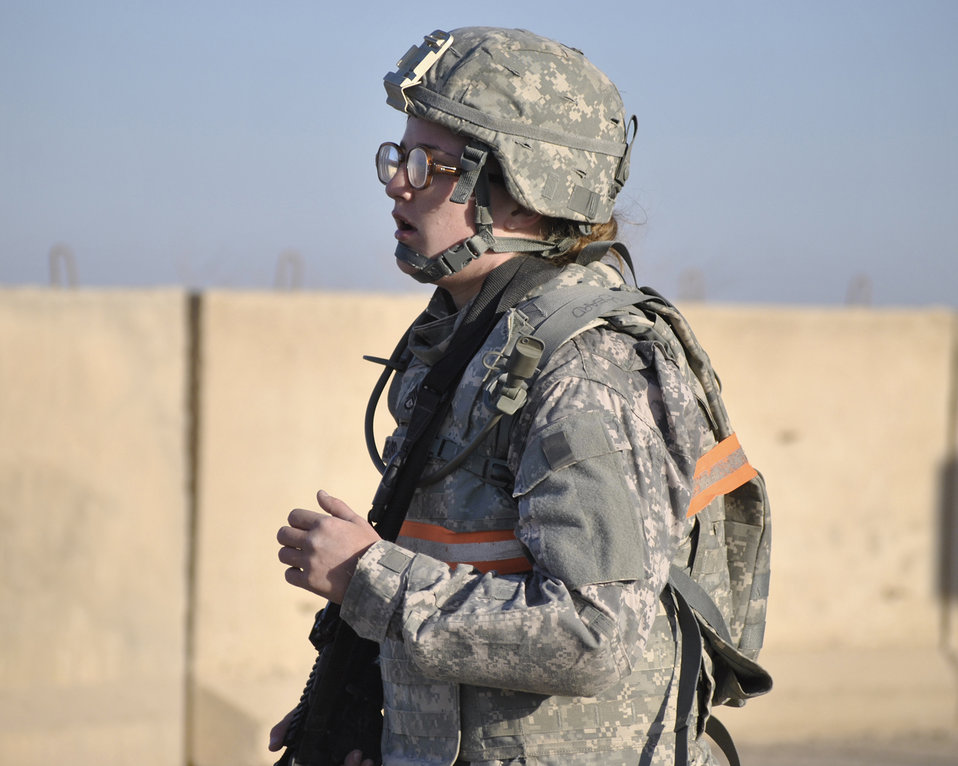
Airman marches, low-crawls and sweats her way into history: Part two

Senior Airman Courtney Beard runs down communication hill Nov. 21, 2010, at Camp Liberty, Iraq. The Brooklyn, N.Y., native was the first female Airman to complete the 18-hour Spur Ride, a series of mental and physical tests, held by the III Corps, Task Force Phantom. Airman Beard is a 467th Expeditionary Intelligence Squadron intelligence analyst.